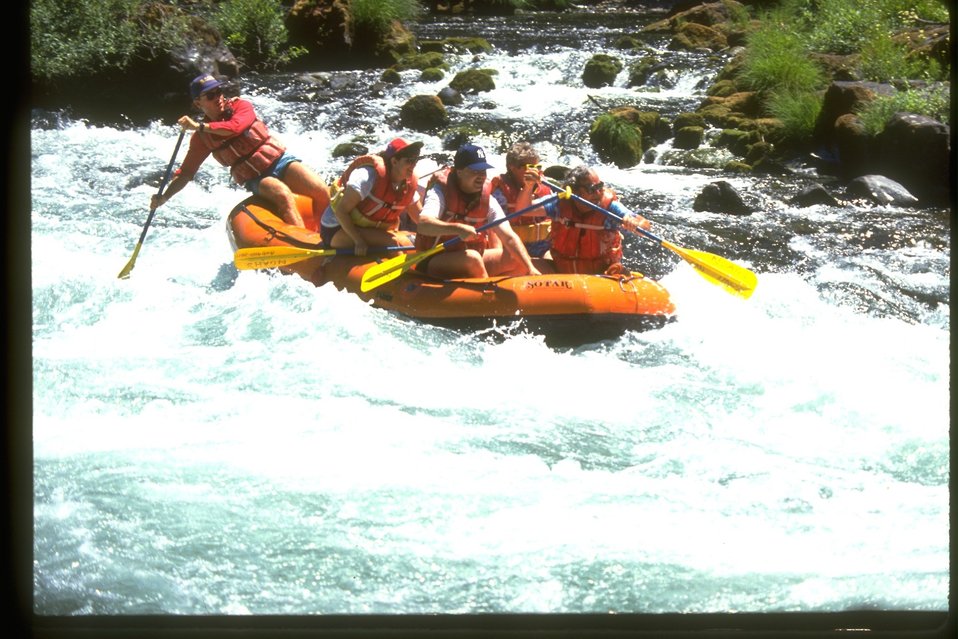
Rafting on the North Umpqua River.